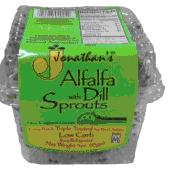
RECALLED - Sprouts

April 19, 2011 - Product Recall - Jonathans Sprouts Recalls Alfalfa Sprouts Because Of Possible Health Risk.